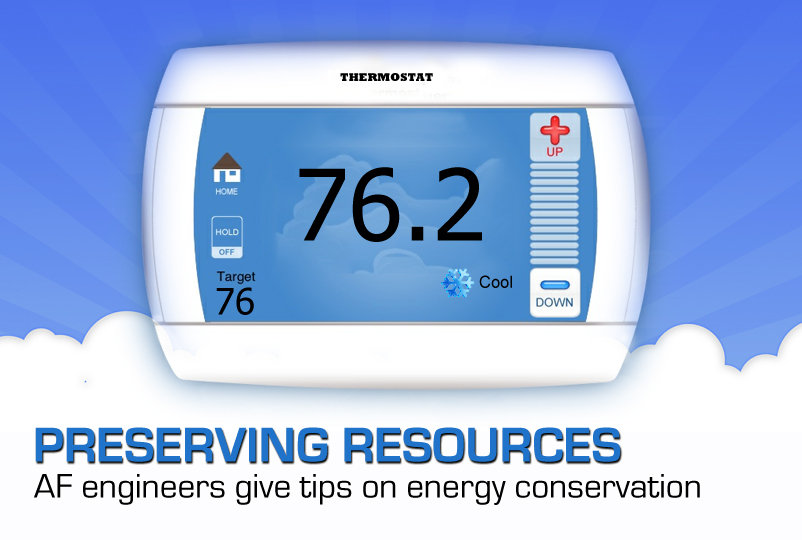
Preserving Resources